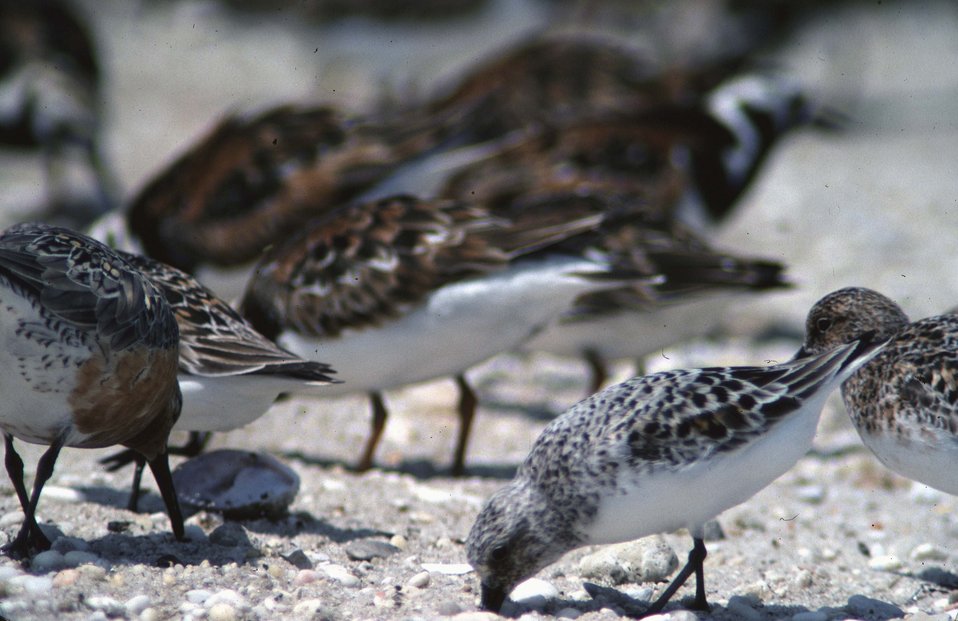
Shorebirds

Reed's Beach, NJ.